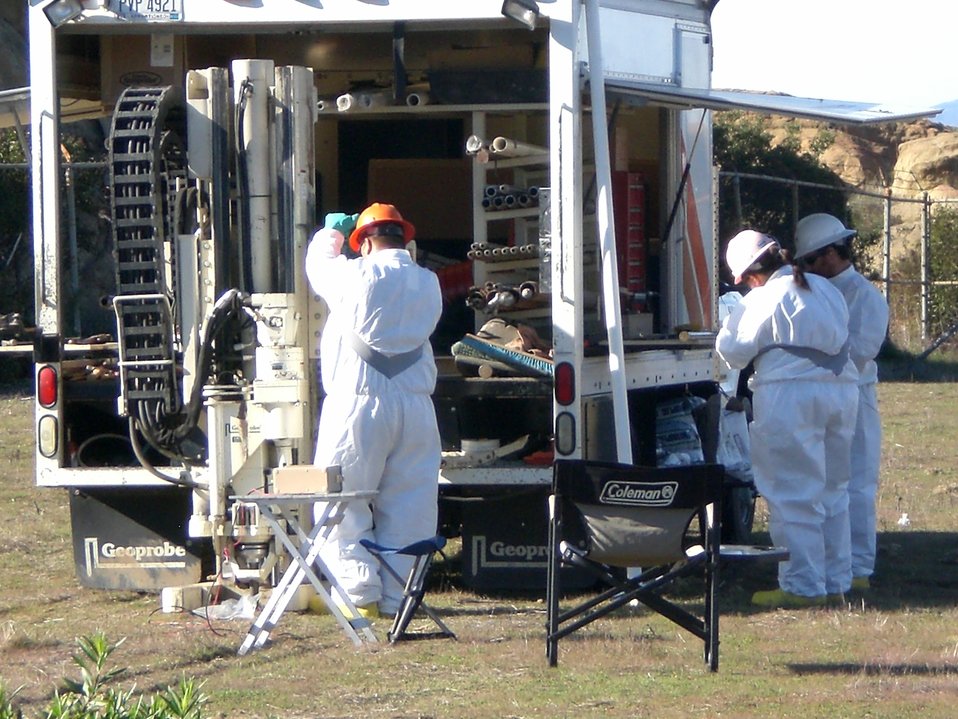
Recovery Act Supports Radiological Study to Guide Cleanup Decisions

Workers perform sub-surface sampling in Santa Susana Field Laboratory Area IV.